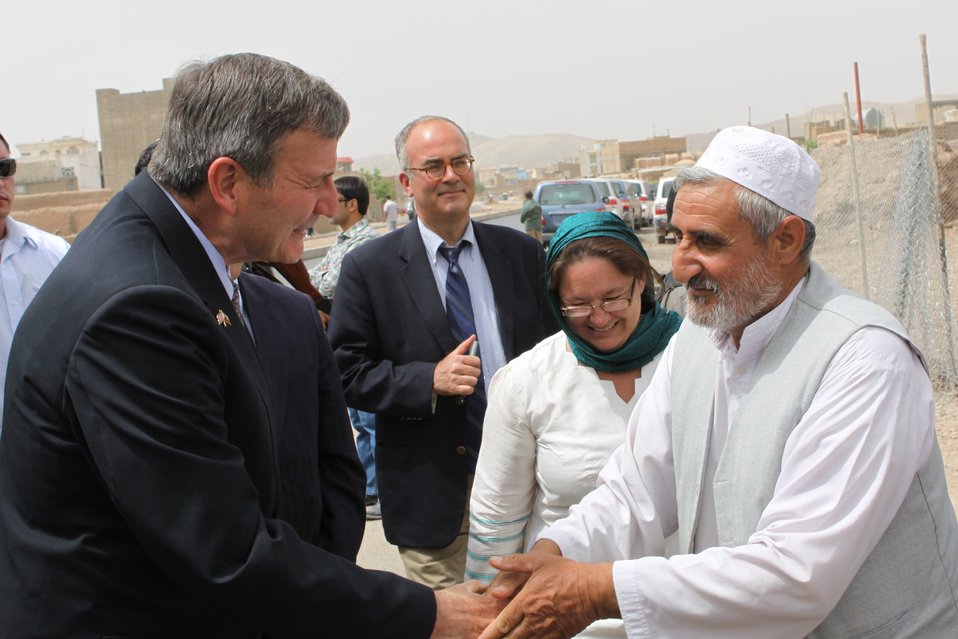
100525 Hirat Marble Conference 605